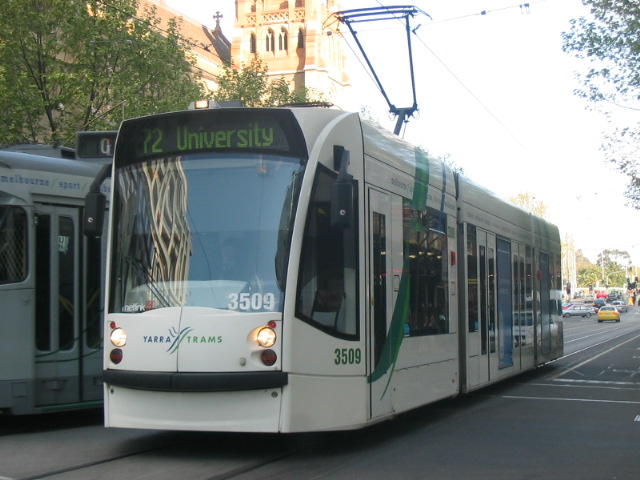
D class tram